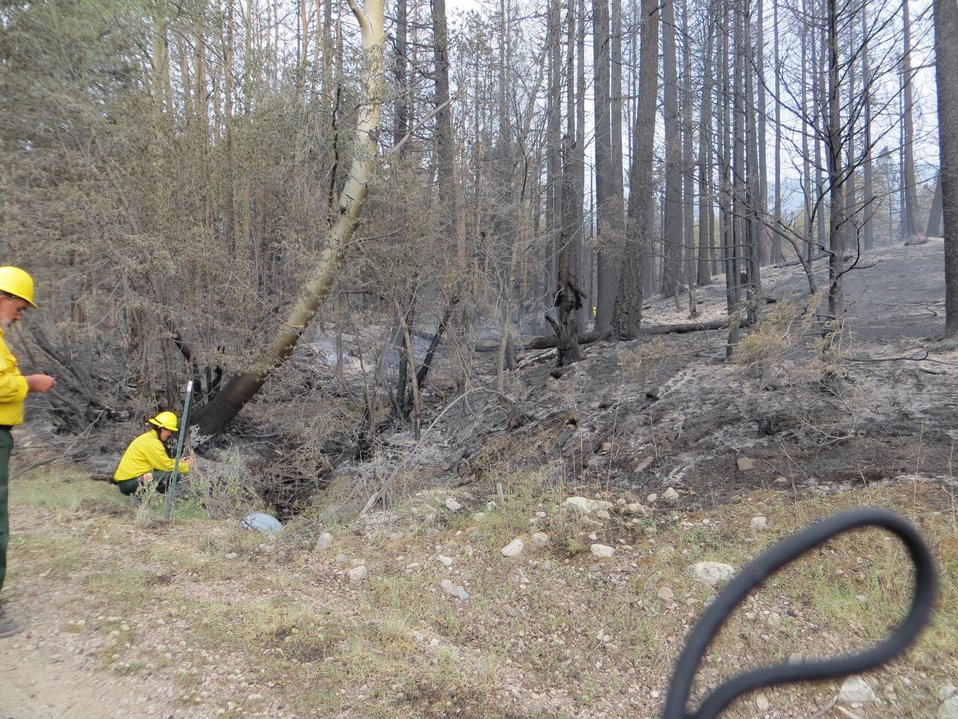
Burned Area Emergency Response (BAER) assessment teams examine the burned out areas at the Thompson Ridge Fire in the Sante Fe National Forest approximately 10 miles north of Jemez, NM. The fire began on May 31, 2013 by human ignition has consumed over 29, 903 acres. BAER teams are comprised of specialists that are highly experienced in conducting rapid watershed assessments and analyses and may include soil scientists, hydrologists, geologists, biologists, geographic information system specialists, archeologists, botanists, silviculturists, and civil engineers. (Silvaculturists are individuals that specialize in the care and cultivation of forest trees).